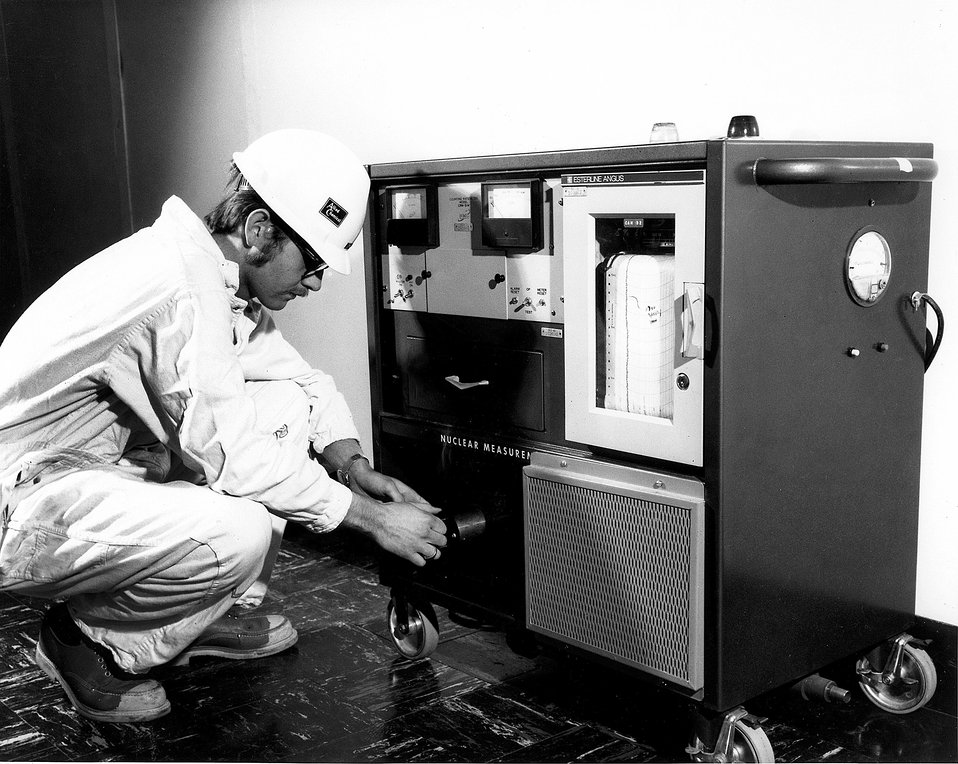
Health physicist changing the filter in a room air monitor.